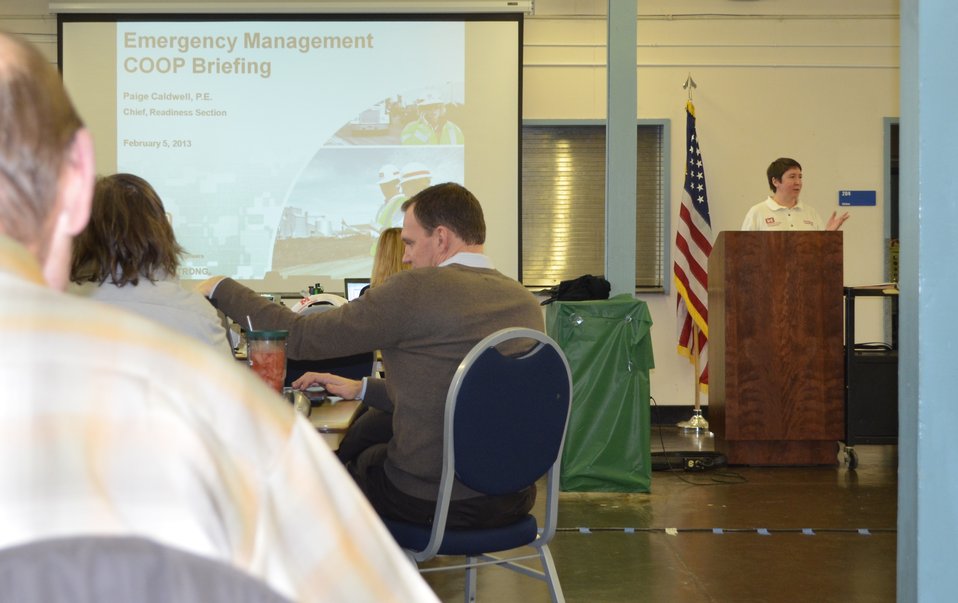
Corps conducts emergency operations training

Paige Caldwell (right), the readiness section chief for the U.S. Army Corps of Engineers Sacramento District, speaks to district staff during a Continuity of Operations Planning exercise Feb. 5, 2013, near Sacramento, Calif. The exercise provided district employees an opportunity to evaluate and improve emergency response plans, and ensure the Corps can continue providing essential services to the public during a disaster. Each year, the Corps deploys hundreds of employees to respond to disasters around the world; sustaining lives with critical commodities; providing technical expertise; and assessing and restoring critical infrastructure.